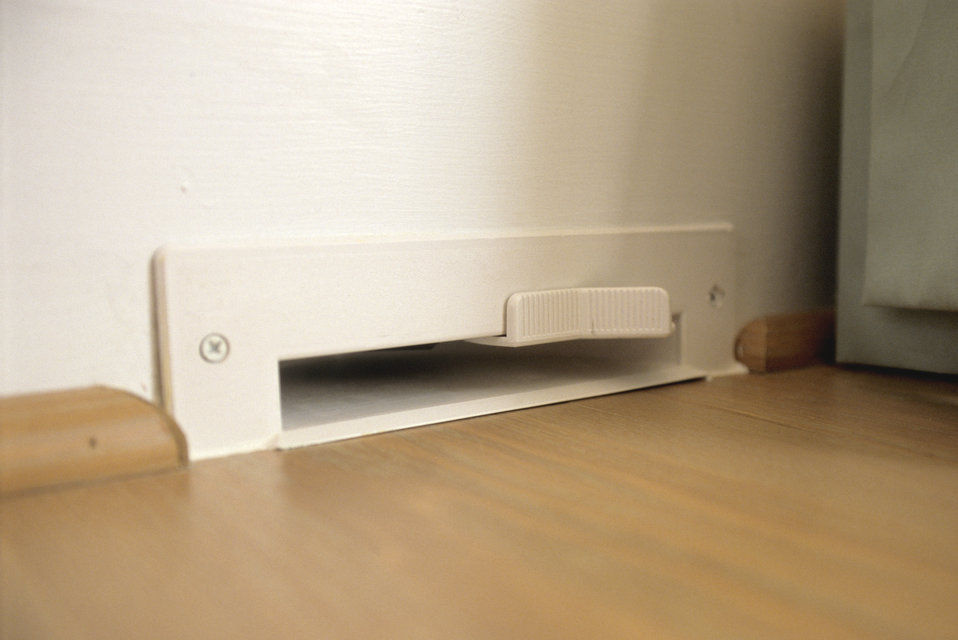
Depicted here, was an intake vent for a whole-house vacuum, otherwise known as an "automatic dustpan", which at floor level, facilitated the act of house-cleaning for those with a mobility, balance, or stamina disability. Such systems eliminated the need to pull a mobile unit which can be difficult and cumbersome for many, even for those who have no mobility impairments.The Center for Universal Design (CUD) is a national research, information, and technical assistance center that evaluates, develops, and promotes accessible and universal design in housing, buildings, outdoor and urban environments and related products. The Center's work manifests the belief that all new environments and products, to the greatest extent possible, should be usable by everyone regardless of their age, ability, or circumstance.